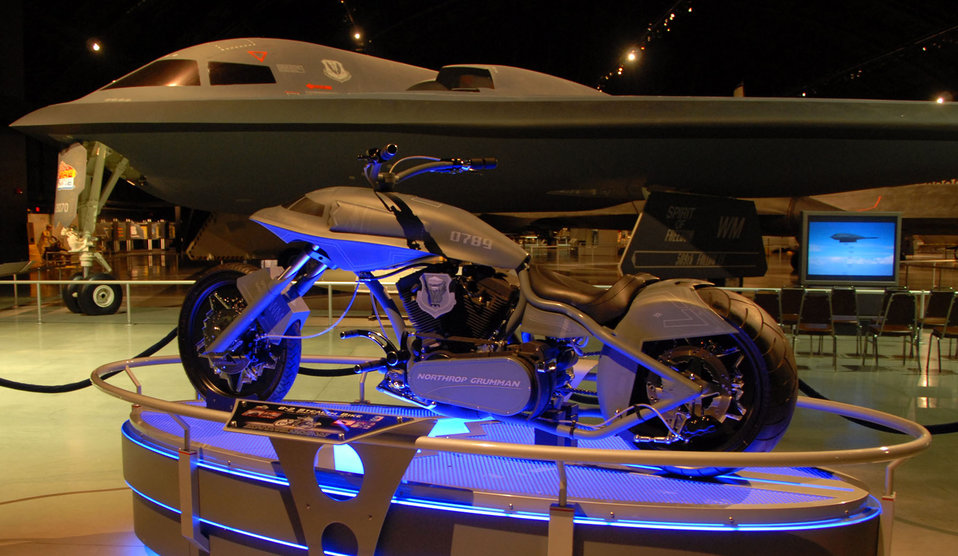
Stealth-y bike

A special B-2 Spirit motorcycle is on display next to the B-2 aircraft in the National Museum of the U.S. Air Force Cold War Gallery May 2 to 28 in Dayton, Ohio. The display commemorates the 20th anniversary of the first flight of the B-2.